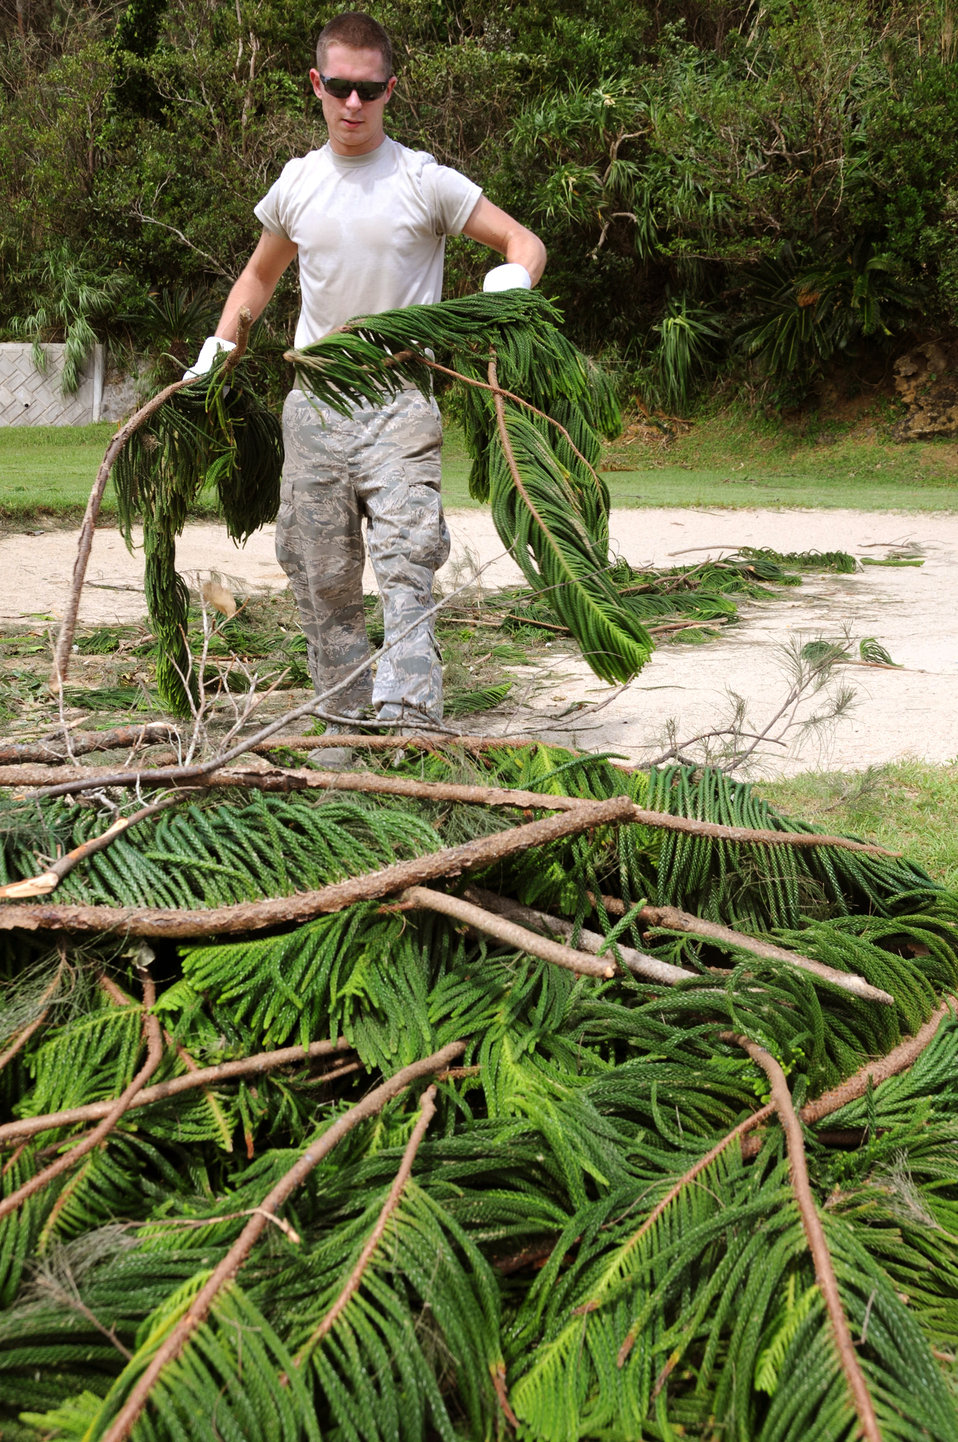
Airmen clean up after typhoon

Airman Corey Weierbach gathers branches into a pile at the Okuma Recreation Area Sep. 2, 2010. More than 100 Airmen volunteered to help clean up the debris left when Typhoon Kompasu struck Okinawa Aug. 31.